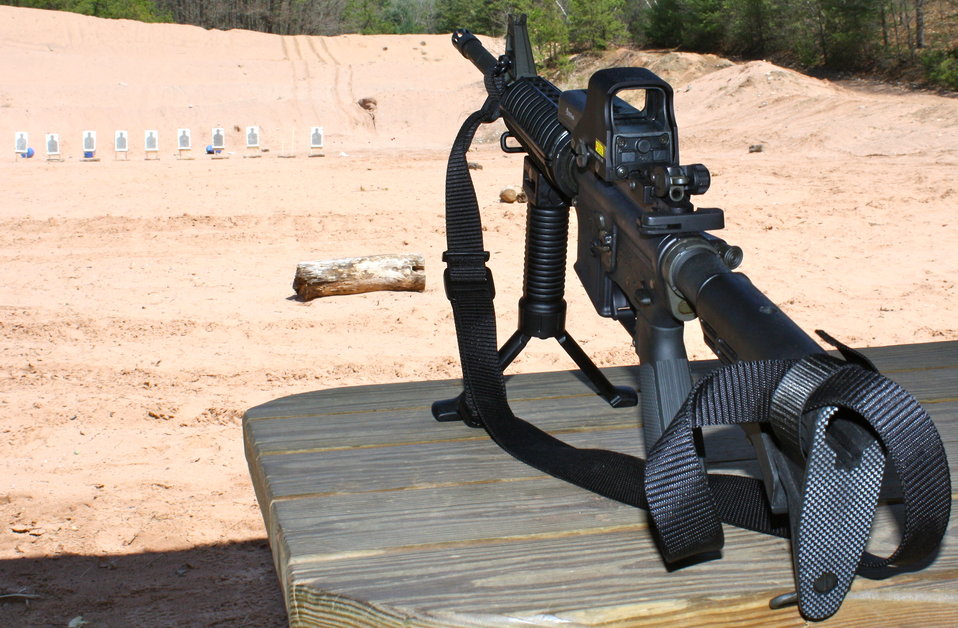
AR-15 on Stand

Law Enforcement target practice at outdoor shooting range in Glastonbury, CT.